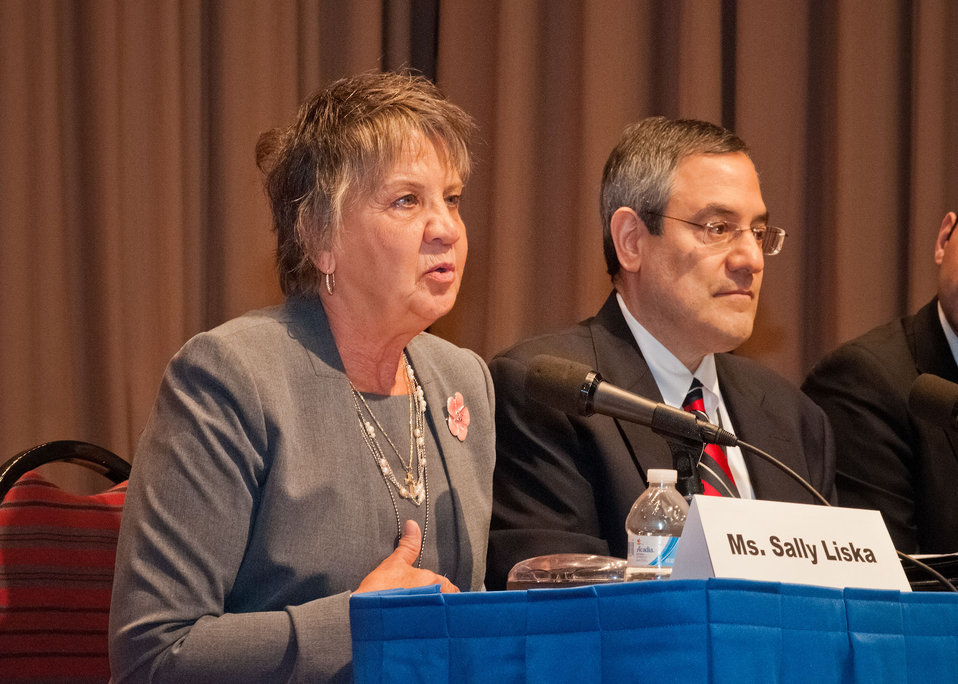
U.S. Department of Agriculture (USDA) Office of the Executive Secretariat employee Sally Liska and USDA Office of Ethics employee Stuart Bender sit on the panel ‘Hiring and Employing Individuals with Disabilities at the USDA 2012 National Disability Employment Awareness Month celebration in the Jefferson Auditorium at USDA in Washington, D.C. on Wednesday, Oct. 17, 2012. The theme for the event was, “A Strong Workforce is an Inclusive Workforce: What Can You Do?